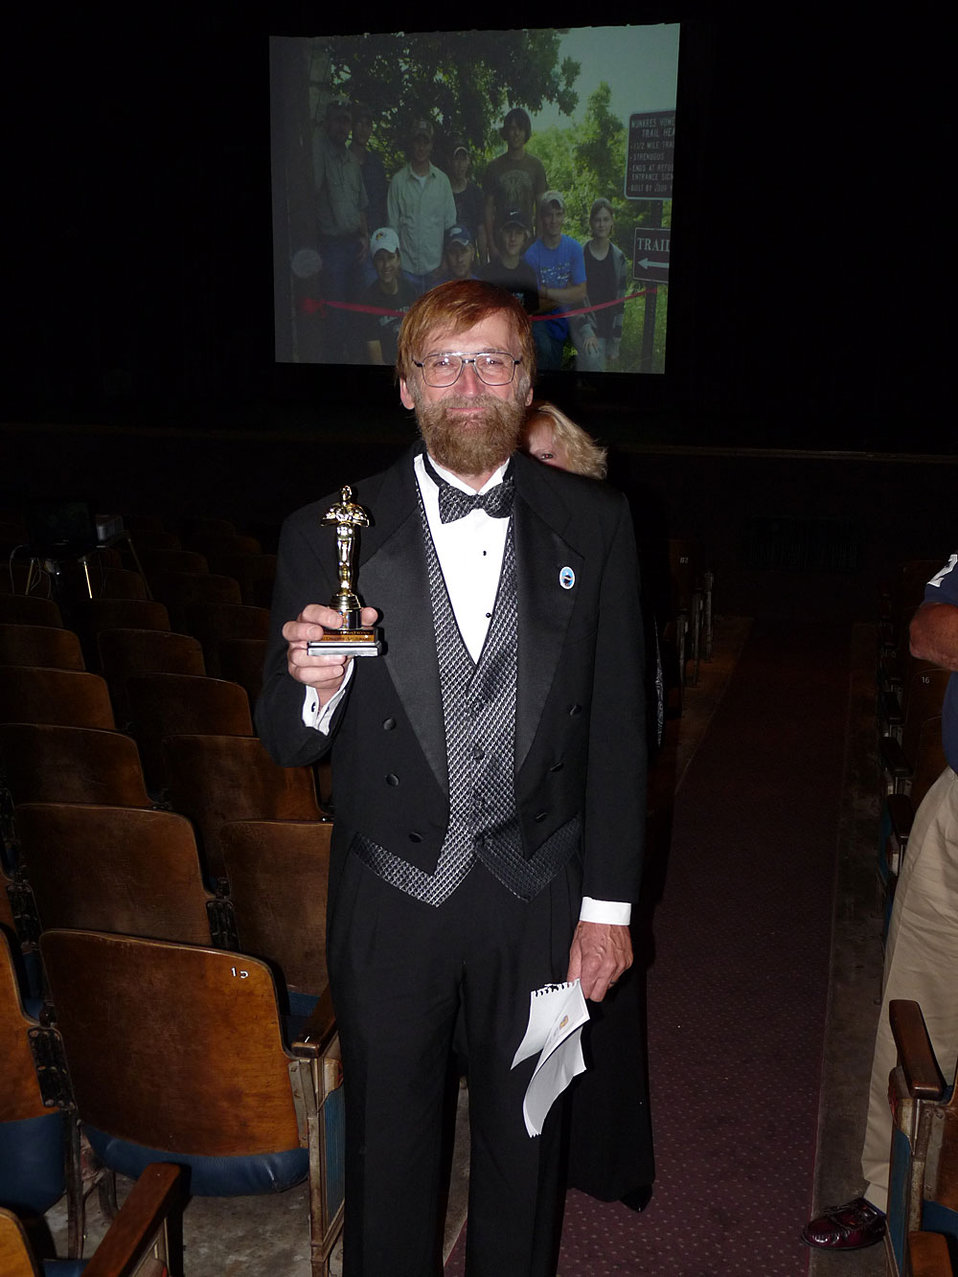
Ron Bell, a U.S. Army Veteran, 1970-1972, is Refuge Manager at Squaw Creek National Wildlife Refuge in Missouri.